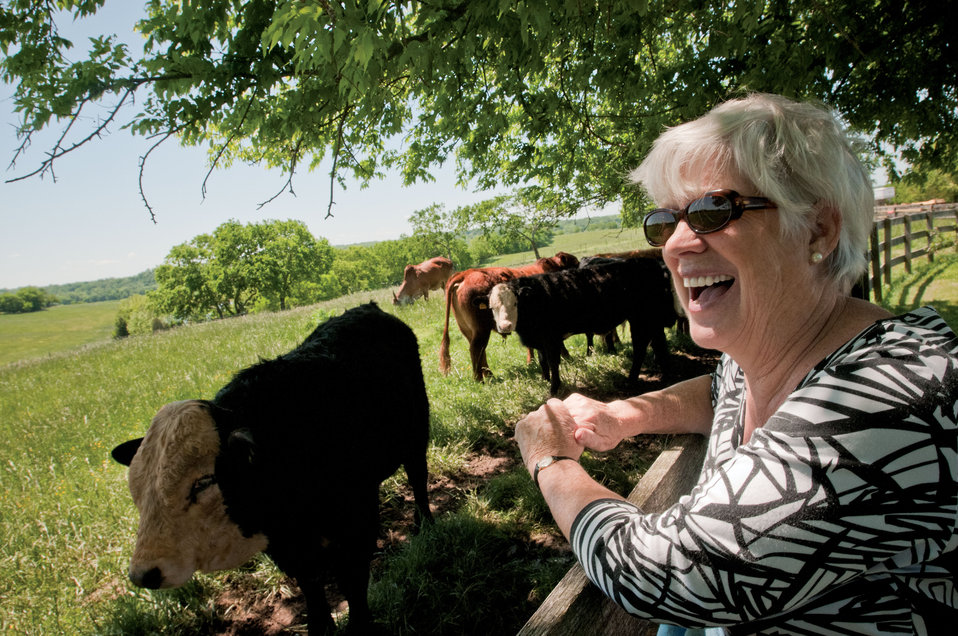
Rossie Fisher, co-owner of Brookview Farm in Manakin-Sabot, VA, on Thursday, May 5, 2011, enjoys being a rancher that supplies beef to Fall Line Farms a local food cooperative in the Richmond, VA area that offers a wide variety of household food staples and specialty items on an ever changing inventory of fruits, vegetables, meats, soaps, eggs, cheeses, flowers, honey, pastas, sauces, syrups, baked goods, mushrooms, flour and grains. Suppliers post what they have on a Lulus Local Food online listing and customers can make their selection. Every Thursday suppliers deliver orders to, one of several pick-up points, designated by the customers in or around the Richmond area.